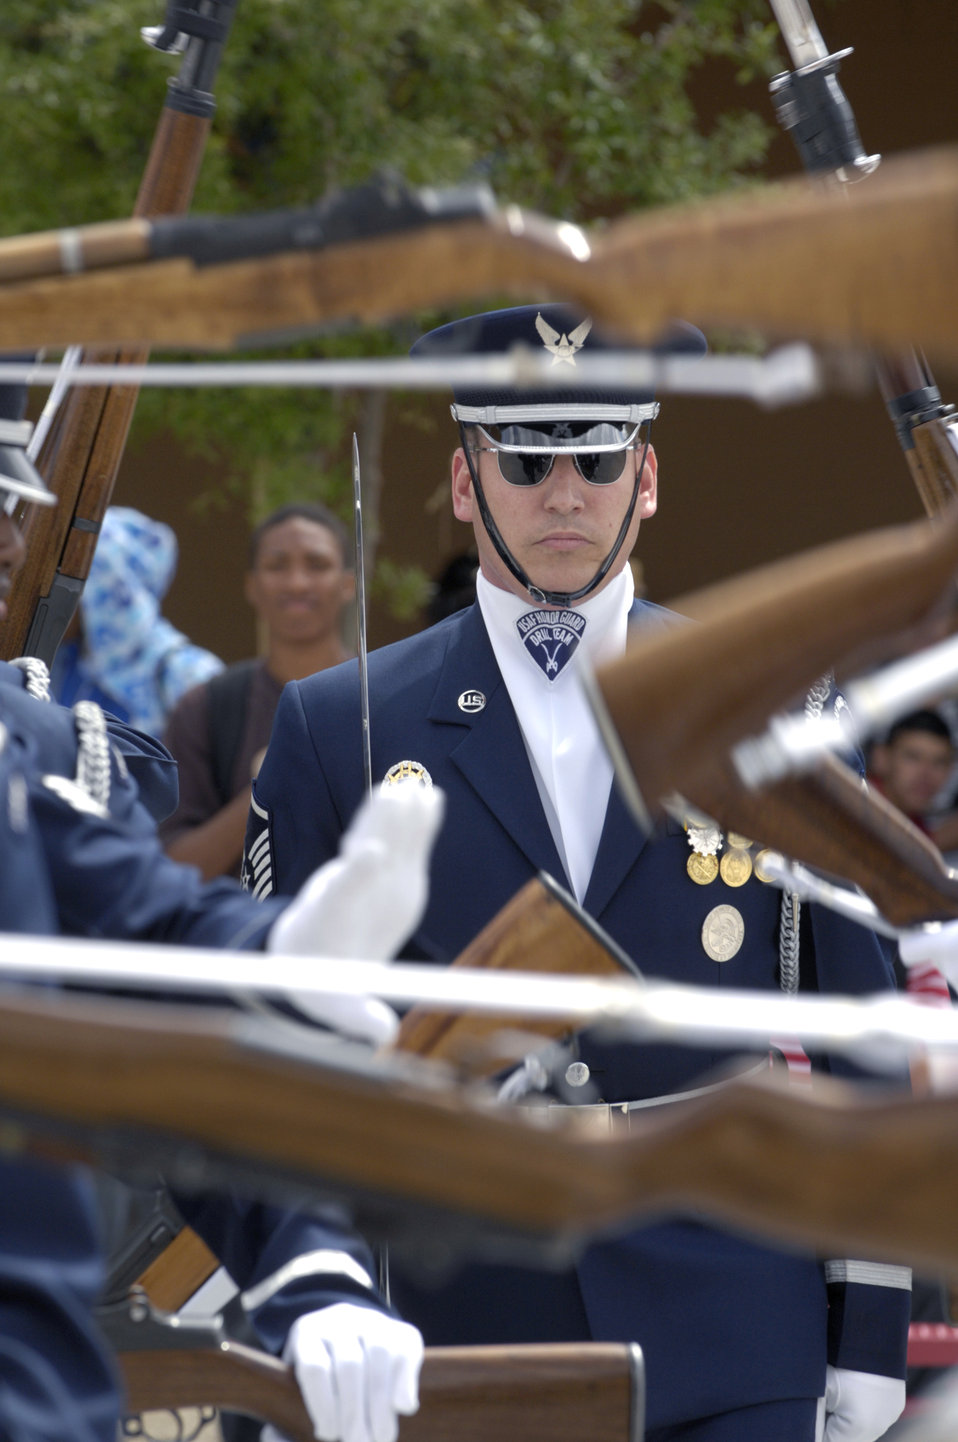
Showcasing the Air Force mission

Master Sgt. Jacob Pullin and the United States Air Force Honor Guard Drill Team perform March 23 at Dysart High School at El Mirage, Ariz. The team visited the high school as a community relations event before their performance at the Luke Air Force Base air show. The drill team is the traveling component of the Air Force Honor Guard and tours Air Force bases worldwide showcasing the precision of today's Air Force to recruit, retain and inspire Airmen for the Air Force mission.